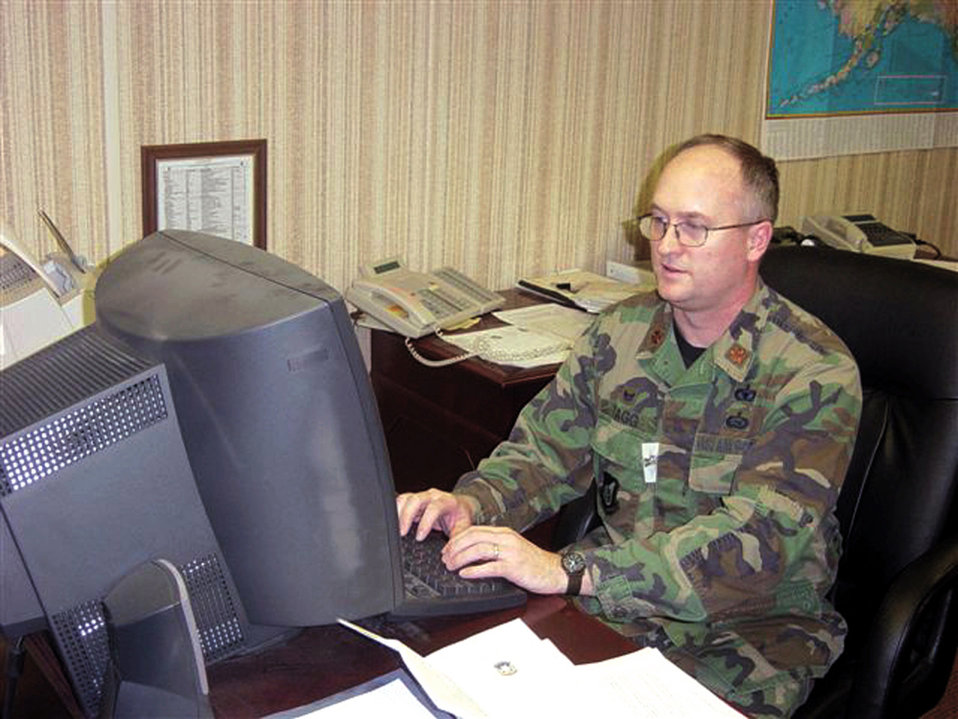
Filling in

ELMENDORF AIR FORCE BASE, Alaska -- Maj. Scott Tagg checks the daily blotter from his office. Major Tagg is an individual mobilization augmentee, a Reserve officer matched against the commander position for the 3rd Security Forces Squadron. When the active-duty servicemember is deployed or temporarily away, an IMA can step in to backfill that position to ensure the unit continues operating normally.